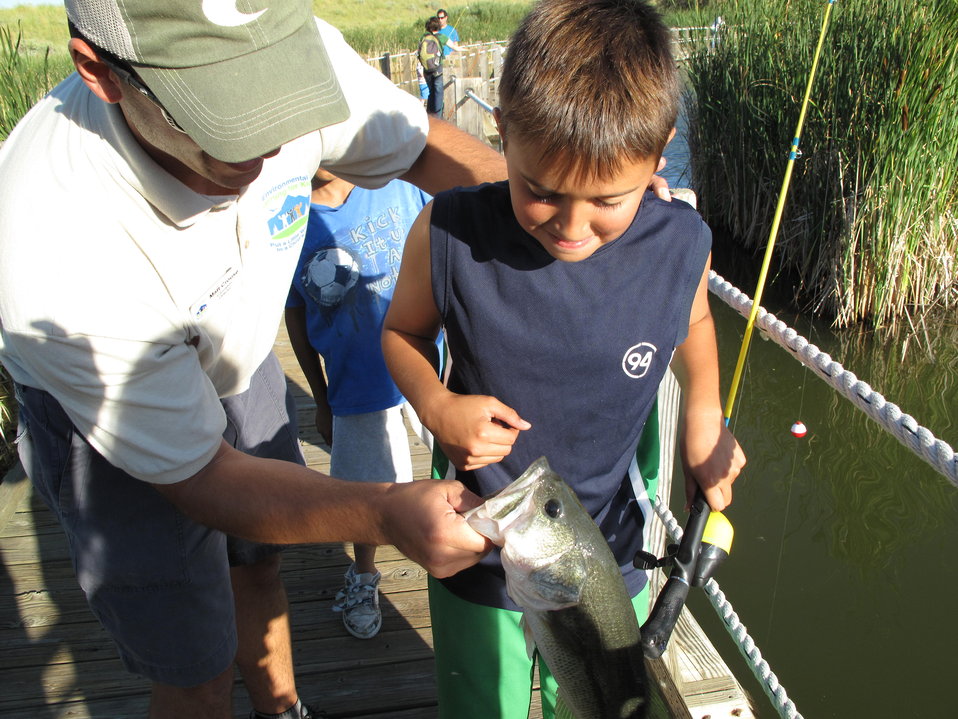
Caught a Big One